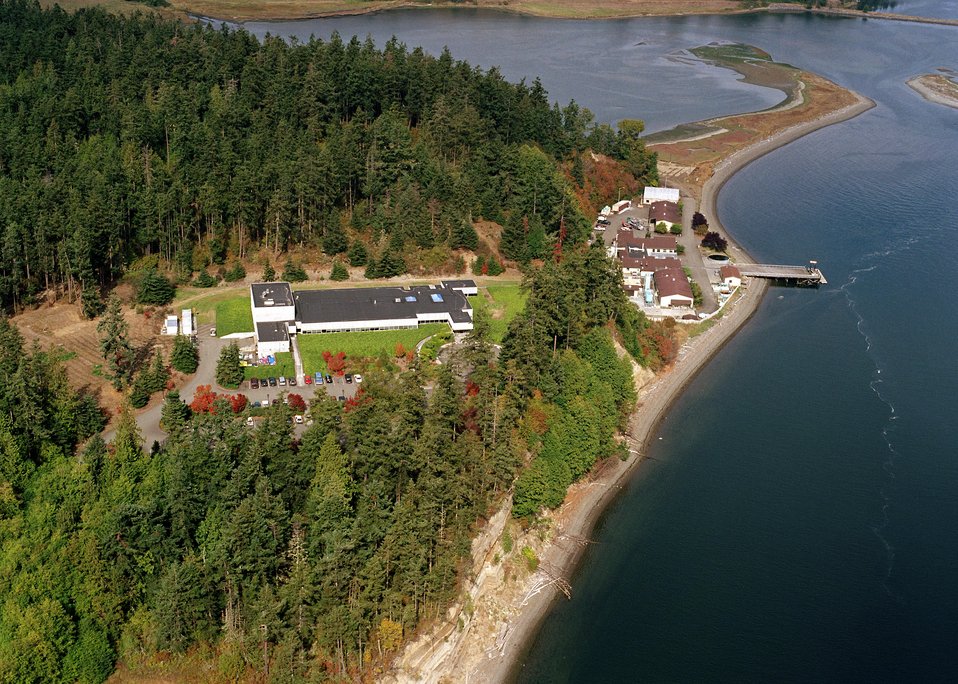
DOE'S MARINE SCIENCES LABORATORY AT THE PACIFIC NORTHWEST NATIONAL LABORATORY.

THE MARINE SCIENCES LABORATORY, LOCATED ON SEQUIM BAY IN WASHINGTON'S PUGET SOUND IS DOE'S ONLY MARINE RESEARCH LABORATORY. USING TOP-OF-THE-LINE EQUIPMENT AND FACILITIES, THE LAB OFFERS CAPABILITIES IN ECO-TOXICOLOGY, ANALYTICAL CHEMISTRY, WETLAND AND COASTAL ECOLOGY, FISHERIES, OCEAN PROCESSES, INSTRUMENTATION, REMOTE SENSING, RISK ASSESSMENT AND BIOTECHNOLOGY REMEDIATION.